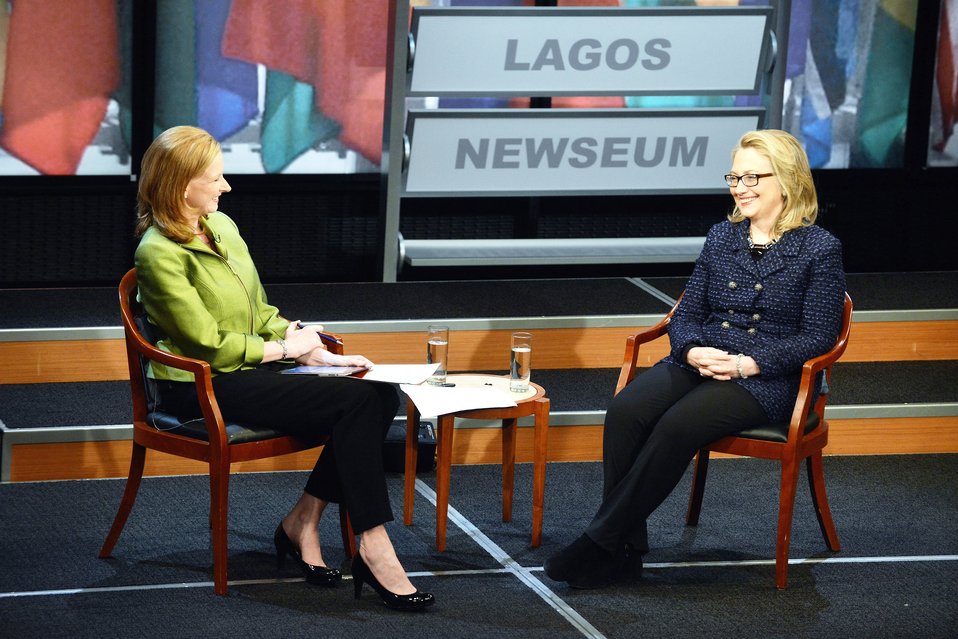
Secretary Clinton Participates in a Global Town Hall

U.S. Secretary of State Hillary Rodham Clinton participates in a Global Town Hall, moderated by Leigh Sales of the Australian Broadcasting Corporation, at the Newseum in Washington, D.C., on January 29, 2013.